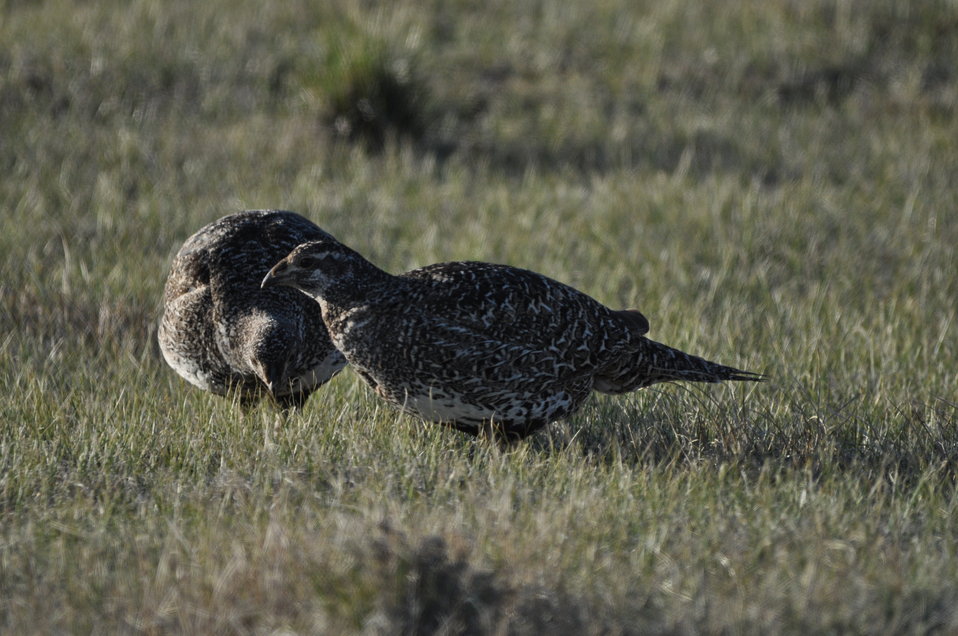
Greater Sage-Grouse

Photo Credit: Jeannie Stafford/USFWS
A greater sage-grouse females at a lek (dancing or mating ground) near Bridgeport, CA.